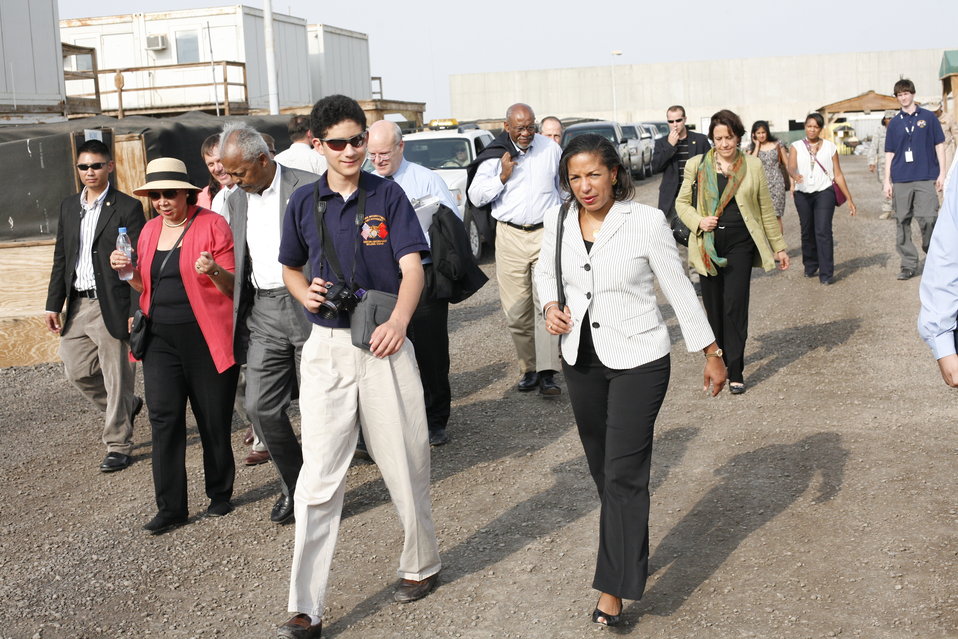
Ambassador Rice Visits Soldier in Djibouti

U.S. Permanent Representative to the United Nations, Ambassador Susan Rice, visits soldiers at Camp Lemonnier in Djibouti on July 8, 2011.